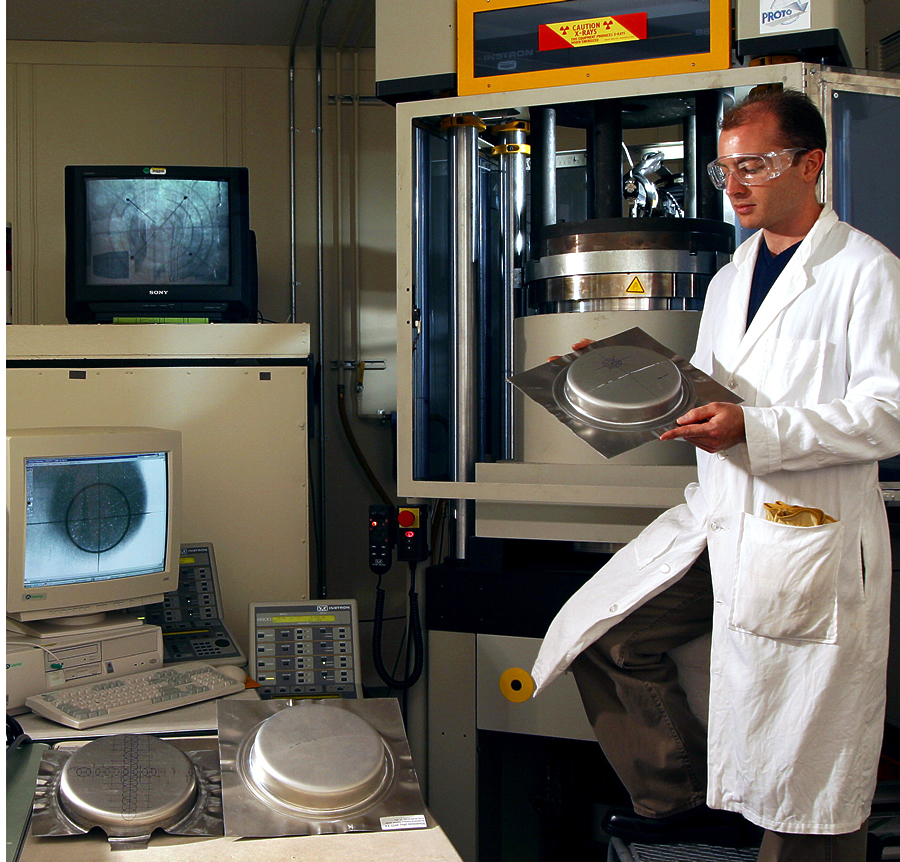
Metal Stamping Project

With new, one-of-a-kind test equipment, National Institute of Standards and Technology (NIST) researchers aim to stamp out costly, delay-causing errors in the design of dies used to make sheet-metal parts ranging from car hoods to airplane wings to pots, pans and cans.